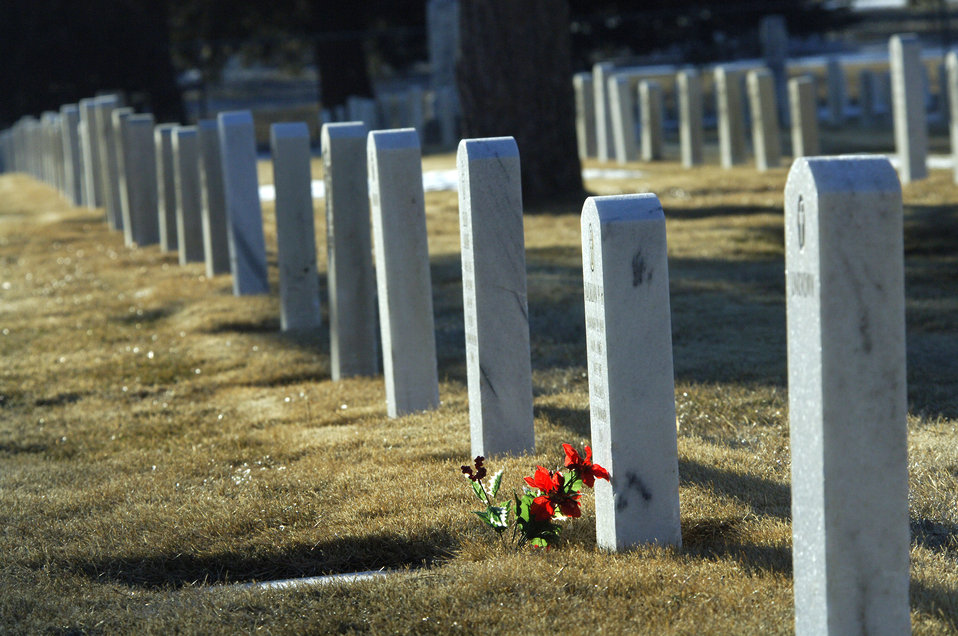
Curator an example of base's close community tie

The old graveyard on F.E. Warren Air Force Base, Wyo., features graves with dates that go back more than a 100 years.